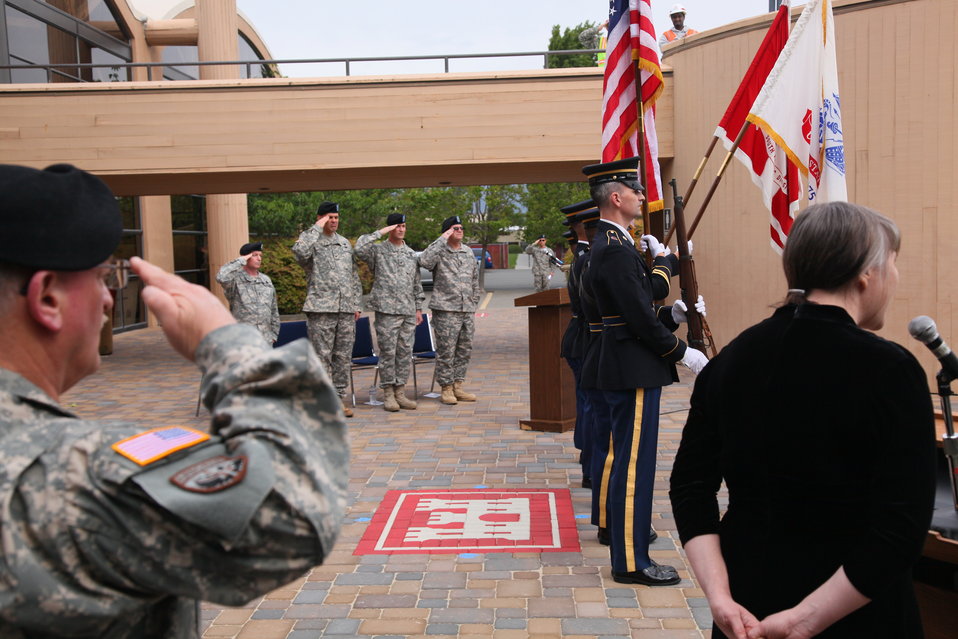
Saluting the flag

The official party salutes during the playing of the national anthem at the U.S. Army Corps of Engineers South Pacific Division change of ceremony June 3, 2011. The event took place at the Corps’ Bay Model visitor center in Sausalito, Calif.